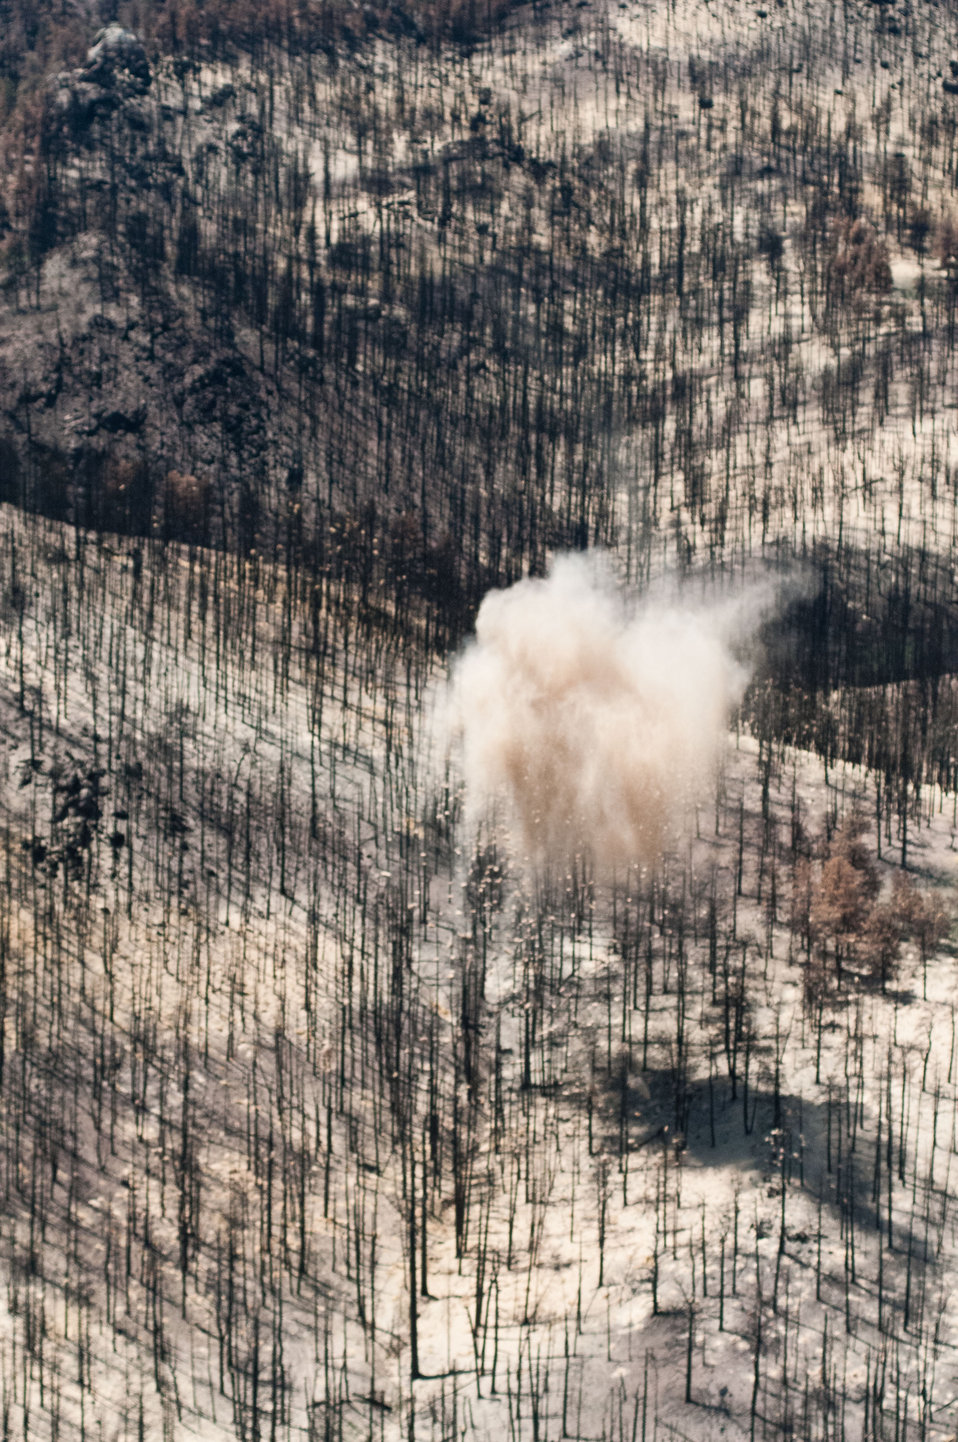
A ton of straw slowly falls during an aerial disbursement over a burned out area of the Poudre Canyon mountainside, on Friday, July 20, 2012, near Fort Collins, Colorado. This is an aerial application of straw that will mitigate soil and ash runoff from the mountainous terrain leading to Seaman Reservoir, drinking water resource for the City of Greeley. Forest Service lands receive straw, while private and other lands receive a seed mix and straw to promote ground cover plant growth on ash-covered lands. In total, 1,800 tons of straw will be applied during the 14-day operation. One quarter of the cost was paid by the City of Greeley and the U.S. Department of Agriculture funded the remainder. The Hewlett Gulch Fire was started by a camper’s alcohol stove, on May 14, at the saddle of a picturesque mountain ridge along the Hewlett Gulch Trail of Poudre Canyon, in the Roosevelt National Forest, 60 miles north of Denver. At it’s peak more than 400 firefighters were battling fires being pushed by 50 mph winds that helped blacken over 12-square-miles of dry ground cover, brush and trees. Many of the trees were already dead and tinder dry from beetle-kill. Their efforts have successfully kept water in the reservoir clean and clear, while downstream water flow has gone from famous Colorado clear water to nearly black flows of water heavily laden with ash, silt, and burnt debris that recent thunderstorms have already washed down from the mountainsides.